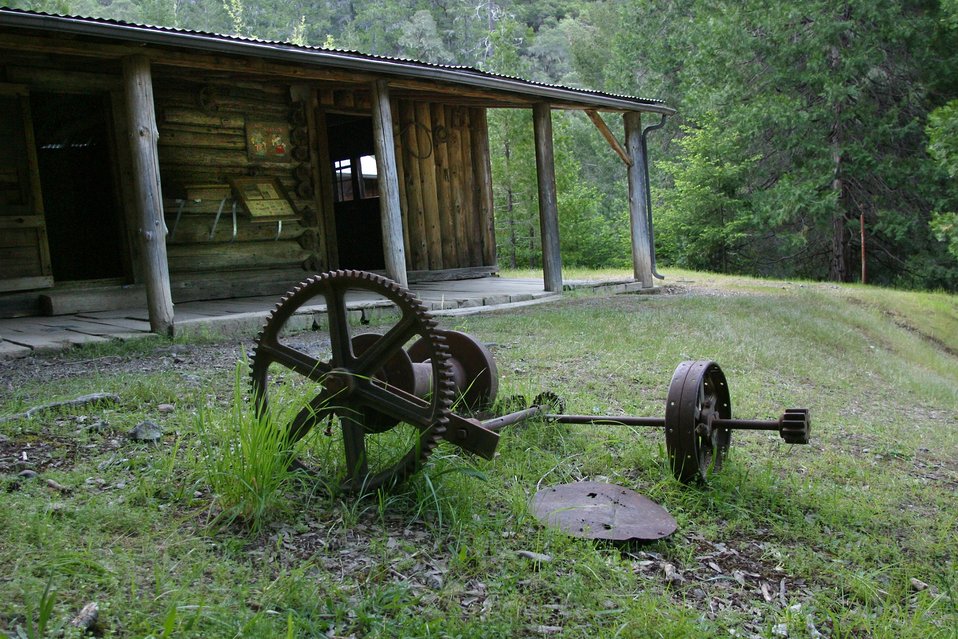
Whisky Creek Cabin along the Wild section of the Rogue River from Grave Creek to Foster Bar. 3100 cfs at Grants Pass and 5300 at Agness.